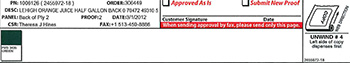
RECALLED – Orange Juice

March 3, 2014 – Product Recall – Lehigh Valley Dairy Conducts Voluntary Recall of Lehigh Valley, Swiss Premium, and Price Chopper Brand Orange Juice Because It May Contain Undeclared Allergen (Milk).